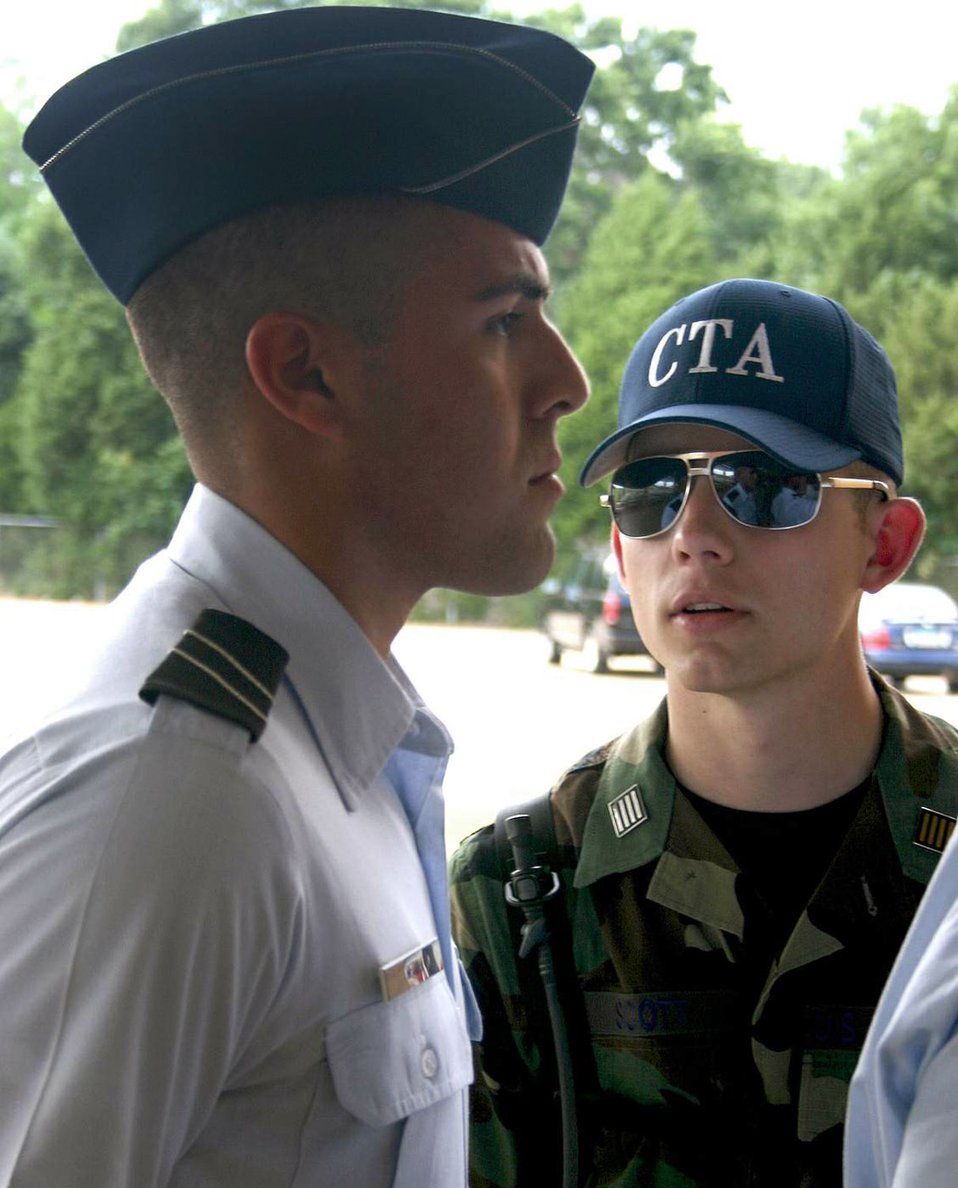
First wave of ROTC field training gets underway

Cadet Gregory Scott (right) corrects a cadet during field training initial in-processing May 8 at Maxwell Air Force Base, Ala. More than 360 ROTC cadets, mostly rising juniors from 144 colleges nationwide, started off the first class of summer field training. Cadet Scott is a ROTC cadet training assistant from Utah's Brigham Young University.